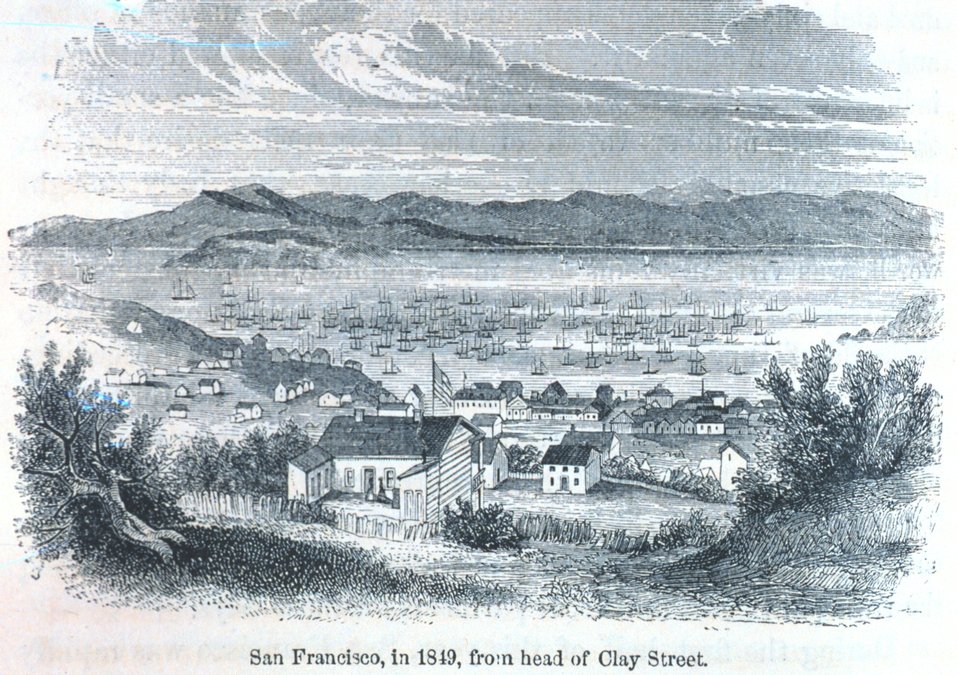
View of San Francisco in 1849 from the head of Clay Street. The ships in the harbor have all been deserted as their crews headed for the gold fields. In: 'The Annals of San Francisco'. Frank Soule, John Gihon, and James Nesbit. 1855. Page 224. D. Appleton & Company, New York. F869.S3.S7 1855.